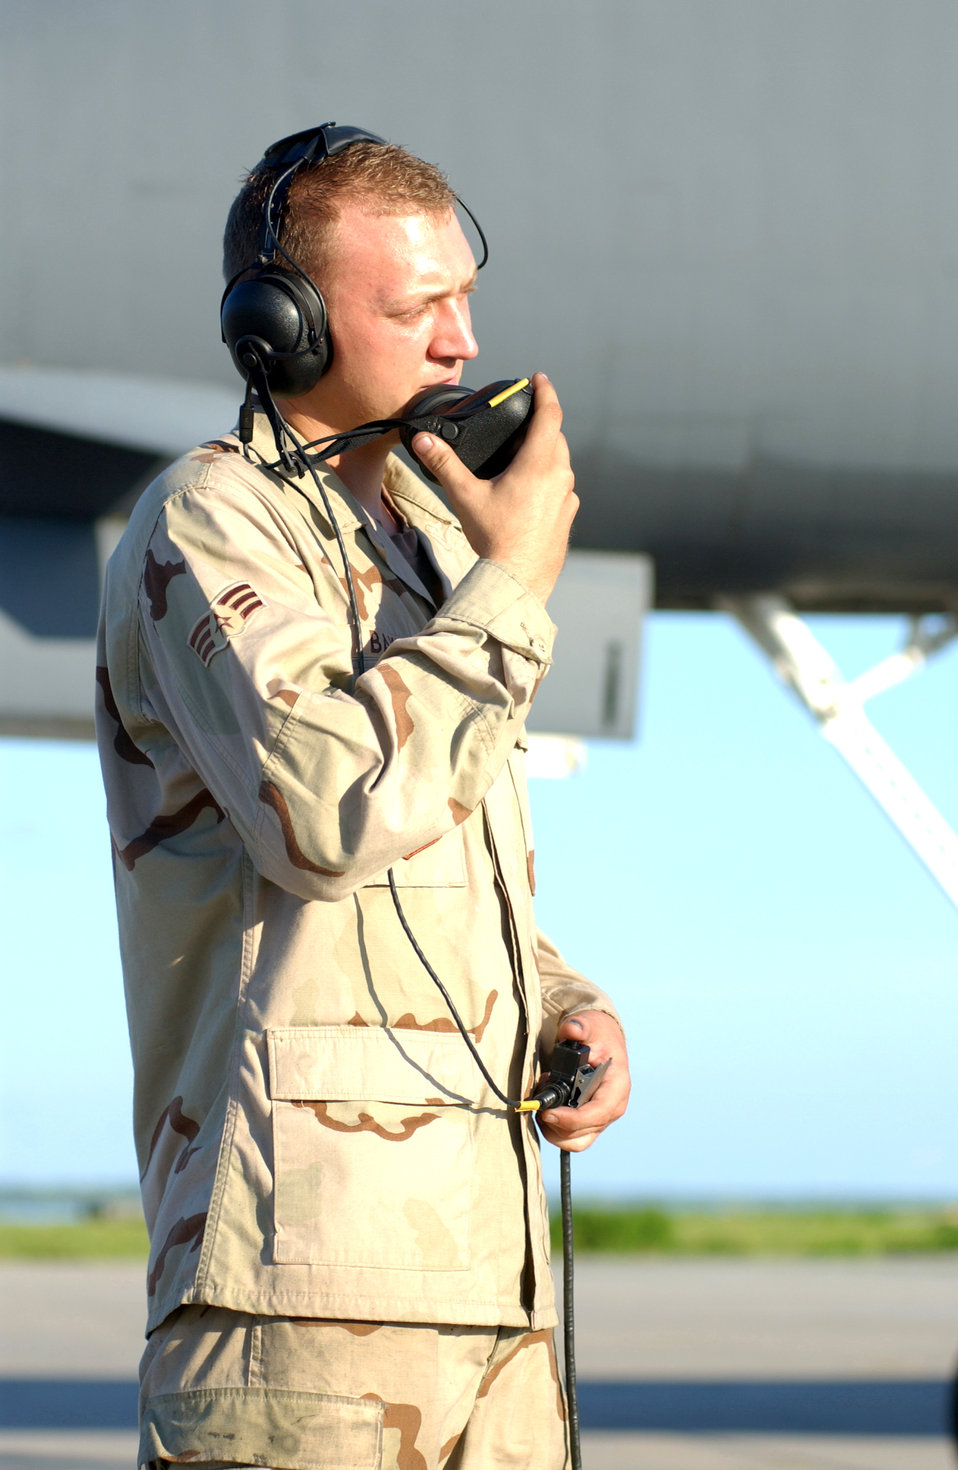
Bomb's away!

OPERATION ENDURING FREEDOM -- Senior Airman Jon Baker communicates with a pilot during the initial startup of a B-1B Lancer. He is a crew chief with the 40th Expeditionary Maintenance Squadron at a forward-deployed location.